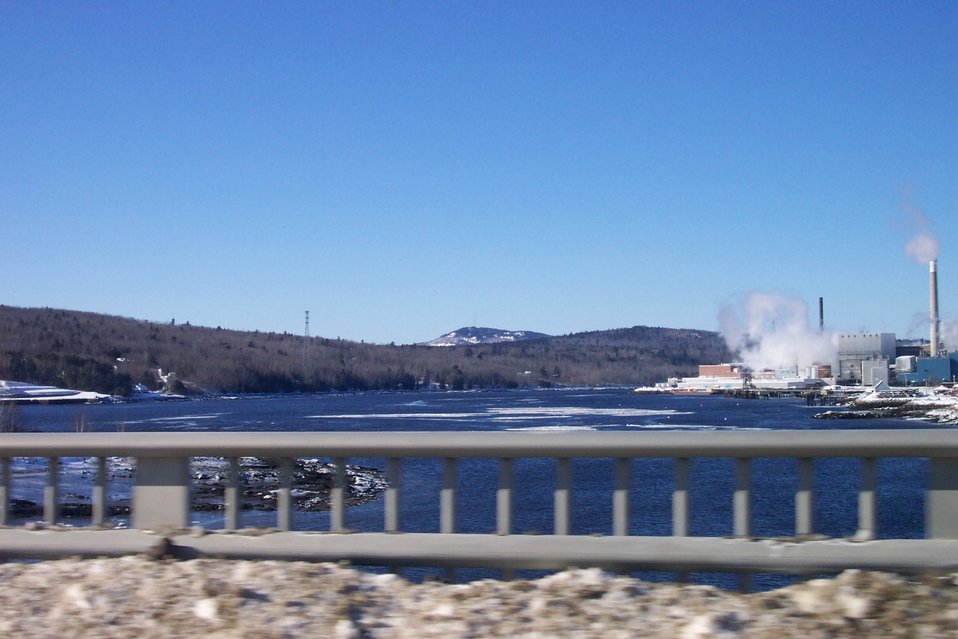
The paper mill at Bucksport from the Bucksport-Verona Bridge.